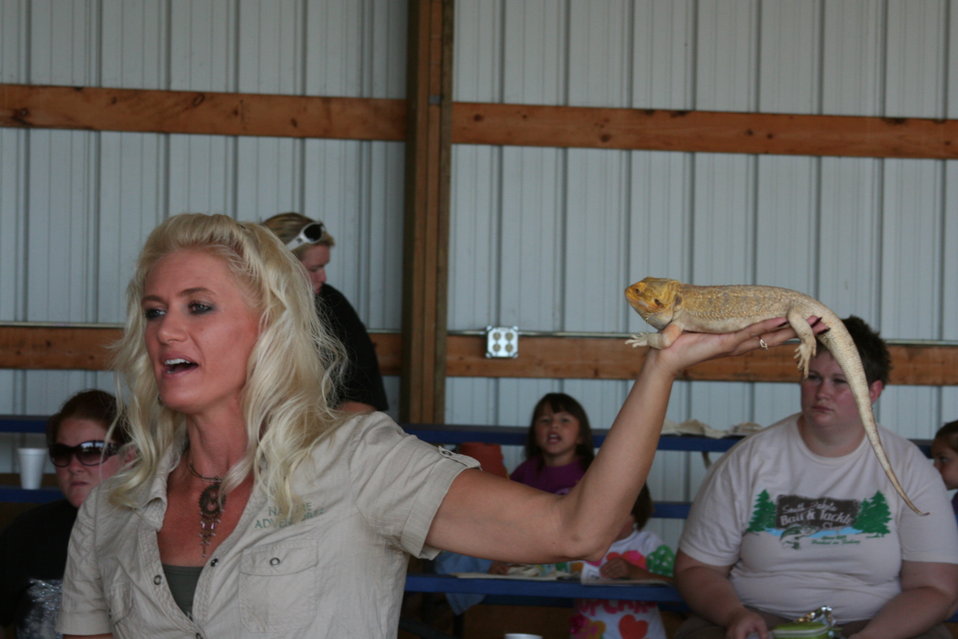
2011 Huron Prairie Fest